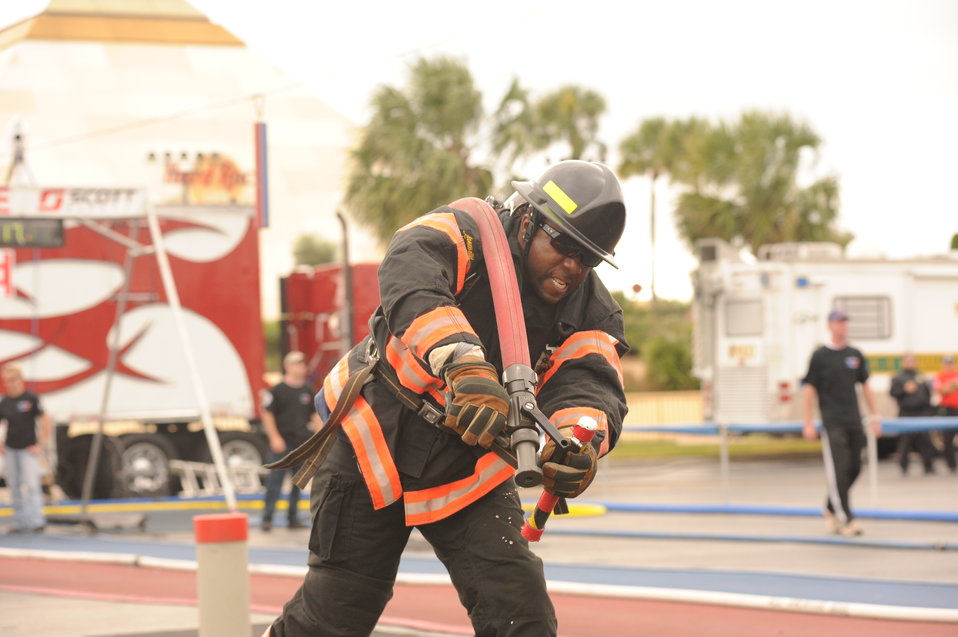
Air Force firefighters aim for the gold

Marcus Shepard, a firefighter from Seymour Johnson Air Force Base, N.C., participates in the hose drag event during the World Firefighter Combat Challenge XX at Myrtle Beach, S.C., Nov. 17, 2011. This is the fourth of five events in the challenge, during which firefighters drag a fully-loaded firehose 75 feet and through a